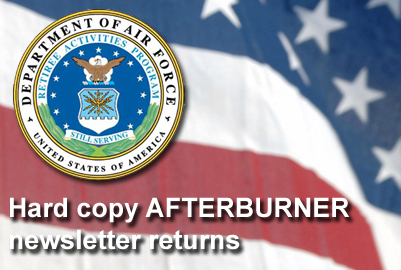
Retiree newsletter back after 3-year hiatus

The Afterburner retiree newsletter is back after a three-year hiatus. Retirees can receive a hard-copy version but those with Internet access are encouraged to sign up for the electronic version to help save postal and printing costs.